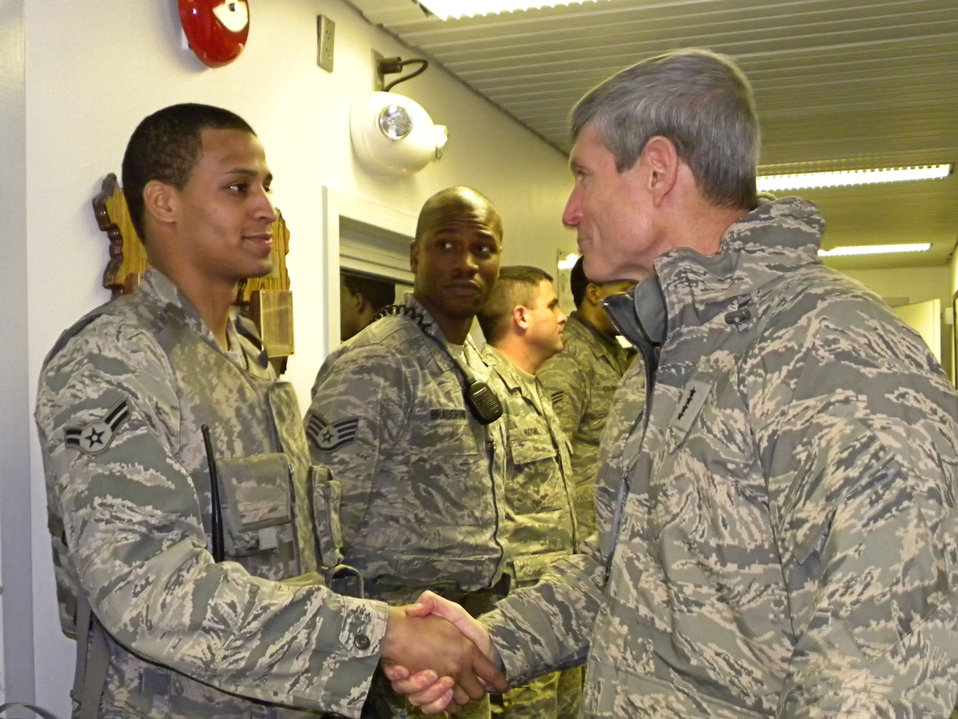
CSAF visit to Thule AB

Air Force Chief of Staff Gen. Norton Schwartz greets Airman 1st Class Paul Milan of the 821st Security Forces Squadron at Thule Air Base, Greenland, Nov. 25, 2010, during a Thanksgiving visit. Thule AB is the Department of Defense's northernmost installation.